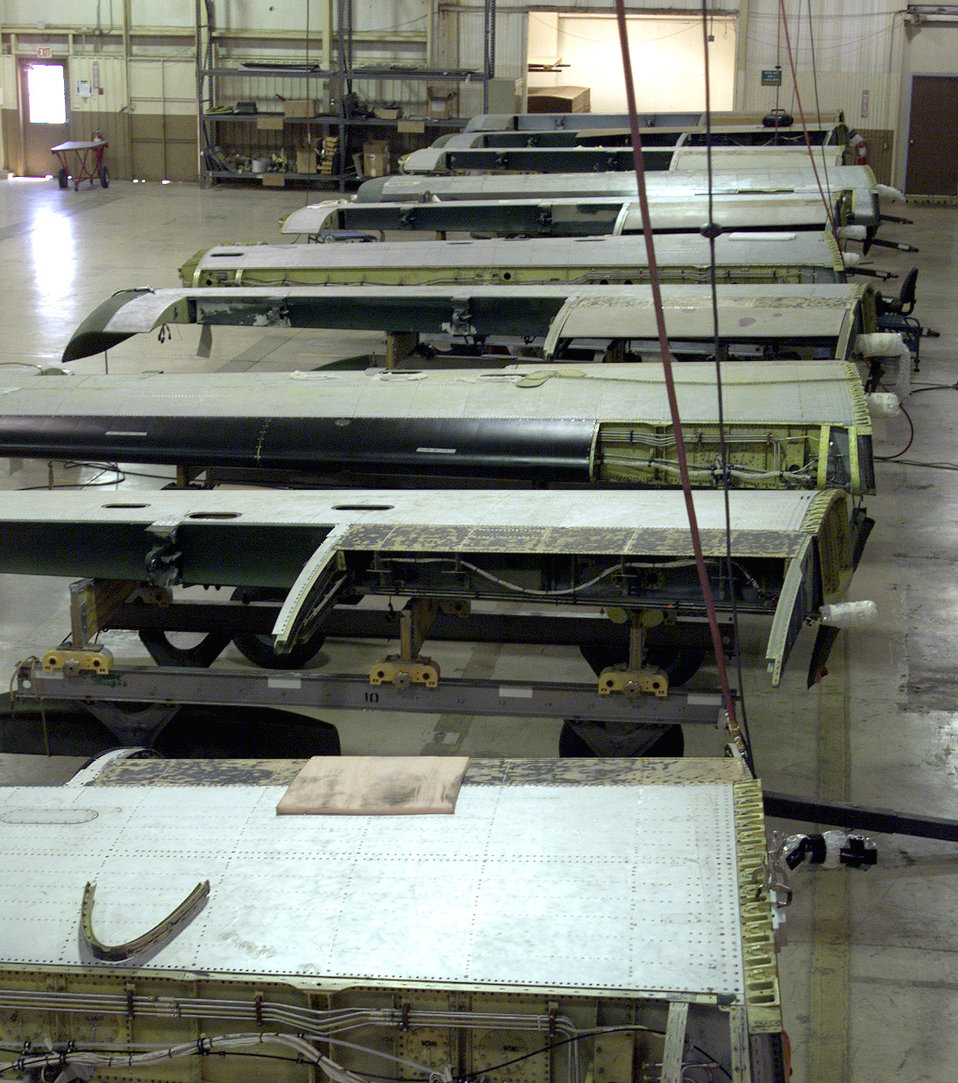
Hog Up

DAVIS-MONTHAN AIR FORCE BASE, Ariz. -- A-10 Thunderbolt II wings undergo inspection and modification by Aerospace Maintenance and Regeneration Center technicians here. The